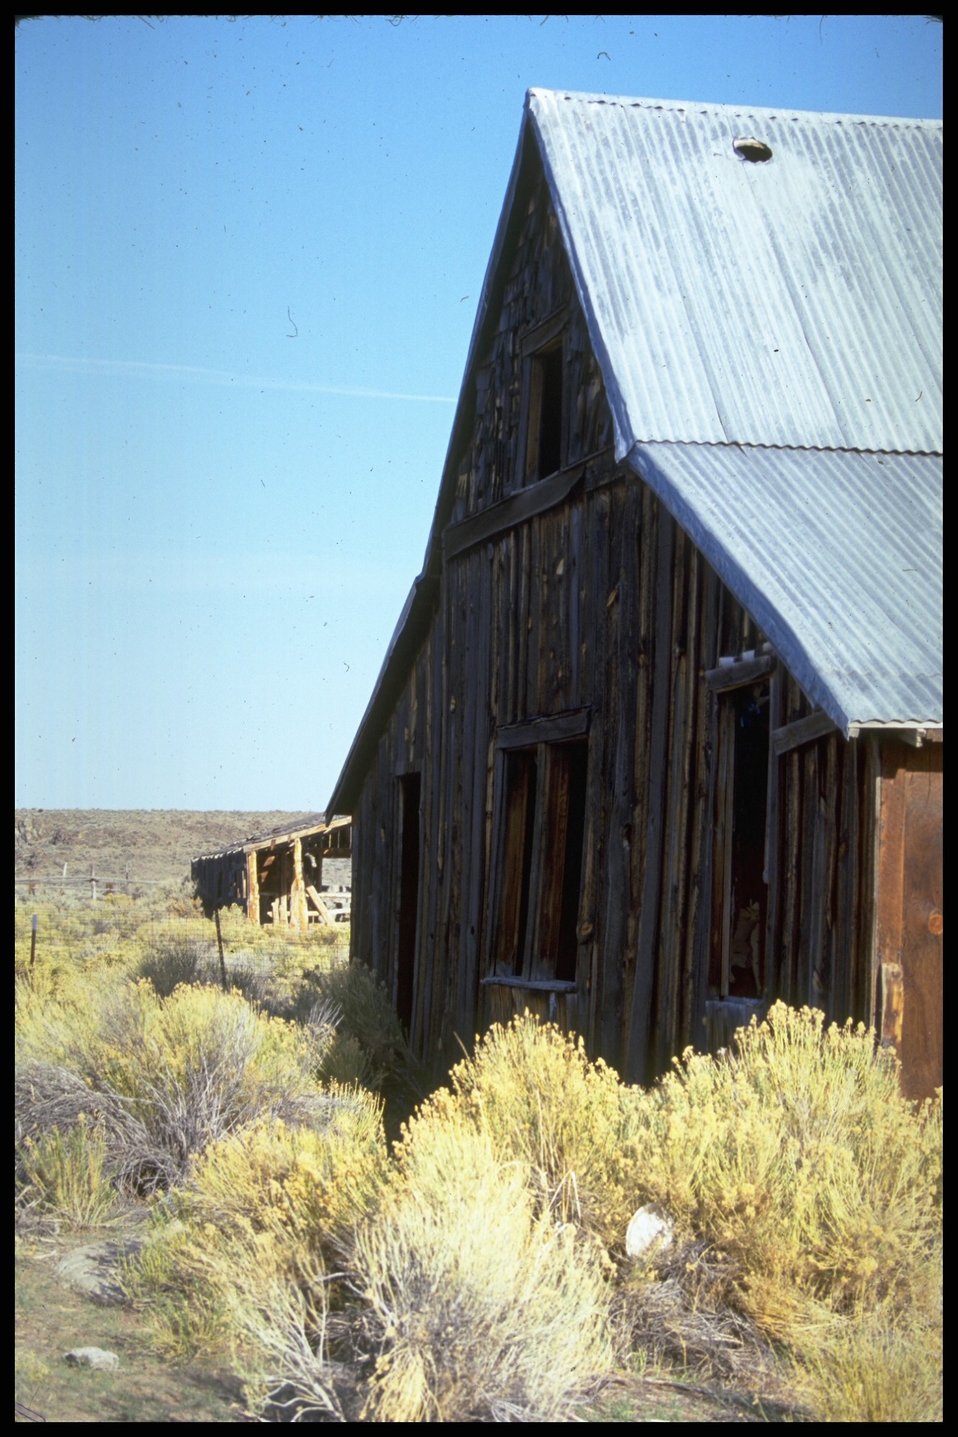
Abandoned house at Shirk Ranch, Lakeview District.